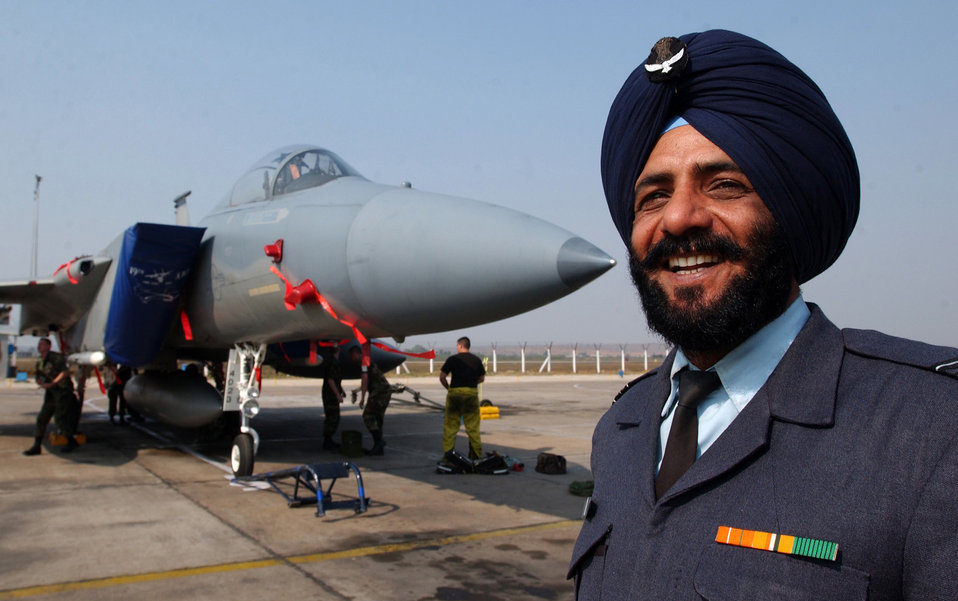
Cope India '04

GWALIOR AIR FORCE STATION, India (AFPN) -- Indian air force Squadron Leader Ajmer Singh Hundal was on hand for the arrival of the first two F-15 Eagle aircraft here Feb. 14. The aircraft and approximately 150 airmen from Elmendorf Air Force Base, Alaska, are participating in Cope India 04, an exercise which runs through Feb. 25.